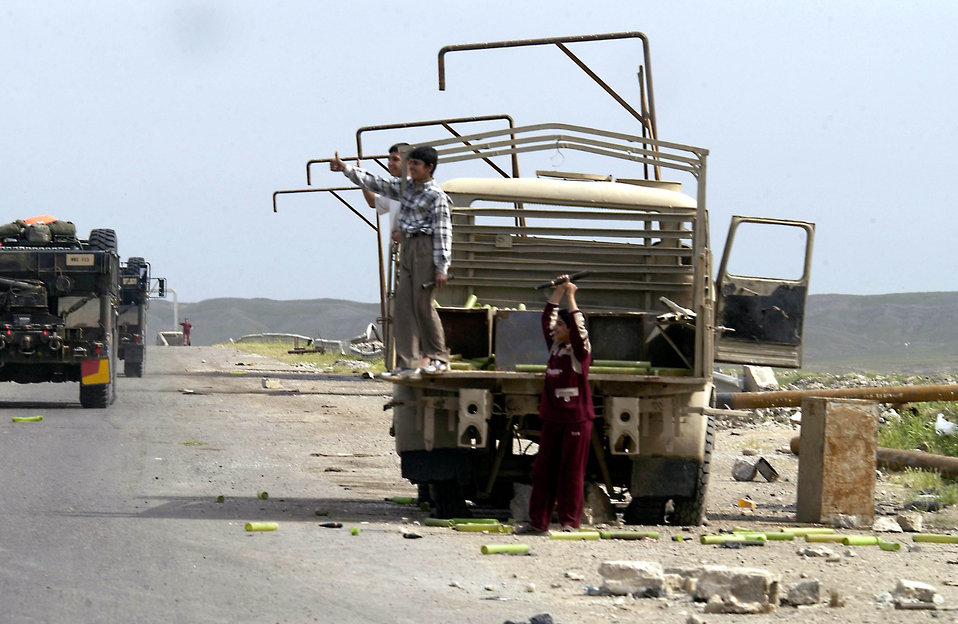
Trip changes airman's view of Iraq

OPERATION IRAQI FREEDOM -- Outside Kirkus, Iraq, Tech. Sgt. Steve Fausili took a photo of Iraqi boys on a burned out truck waving at an American convoy. Fausili is a combat cameraman assigned to the 1st Combat Camera Squadron at Charleston Air Force Base, S.C.